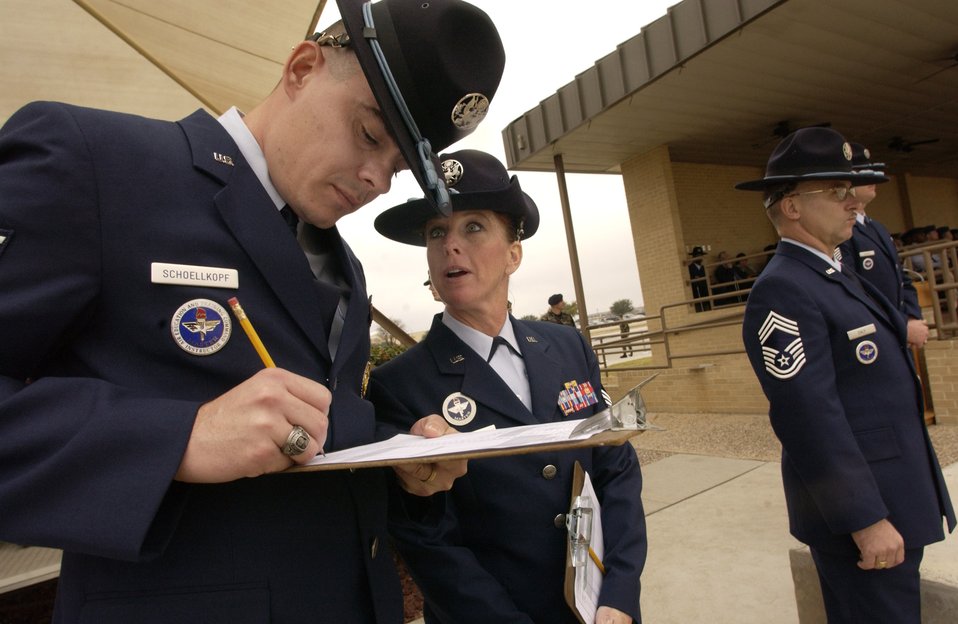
Graduation day

LACKLAND AIR FORCE BASE, Texas (AFPN) -- Military training instructors, Tech. Sgt. Marc Schoellkopf (left), Master Sgt Lisa Moberly and Chief Master Sgt Lester Daly evaluate 961 basic trainees and their instructors during the final basic military training graduation of 2005. The instructors award merit points that are given monthly and annually to basic training flights with the best drill and ceremony skills.